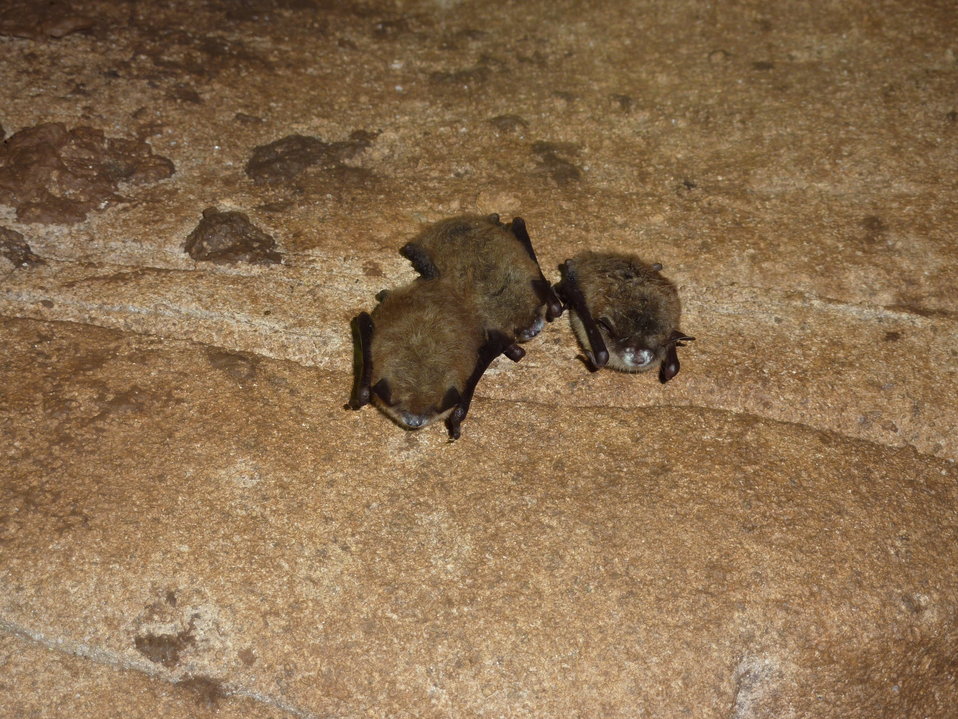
Little brown bats with white-nose syndrome, Trigg Co., KY

Cluster of three little brown bats with WNS